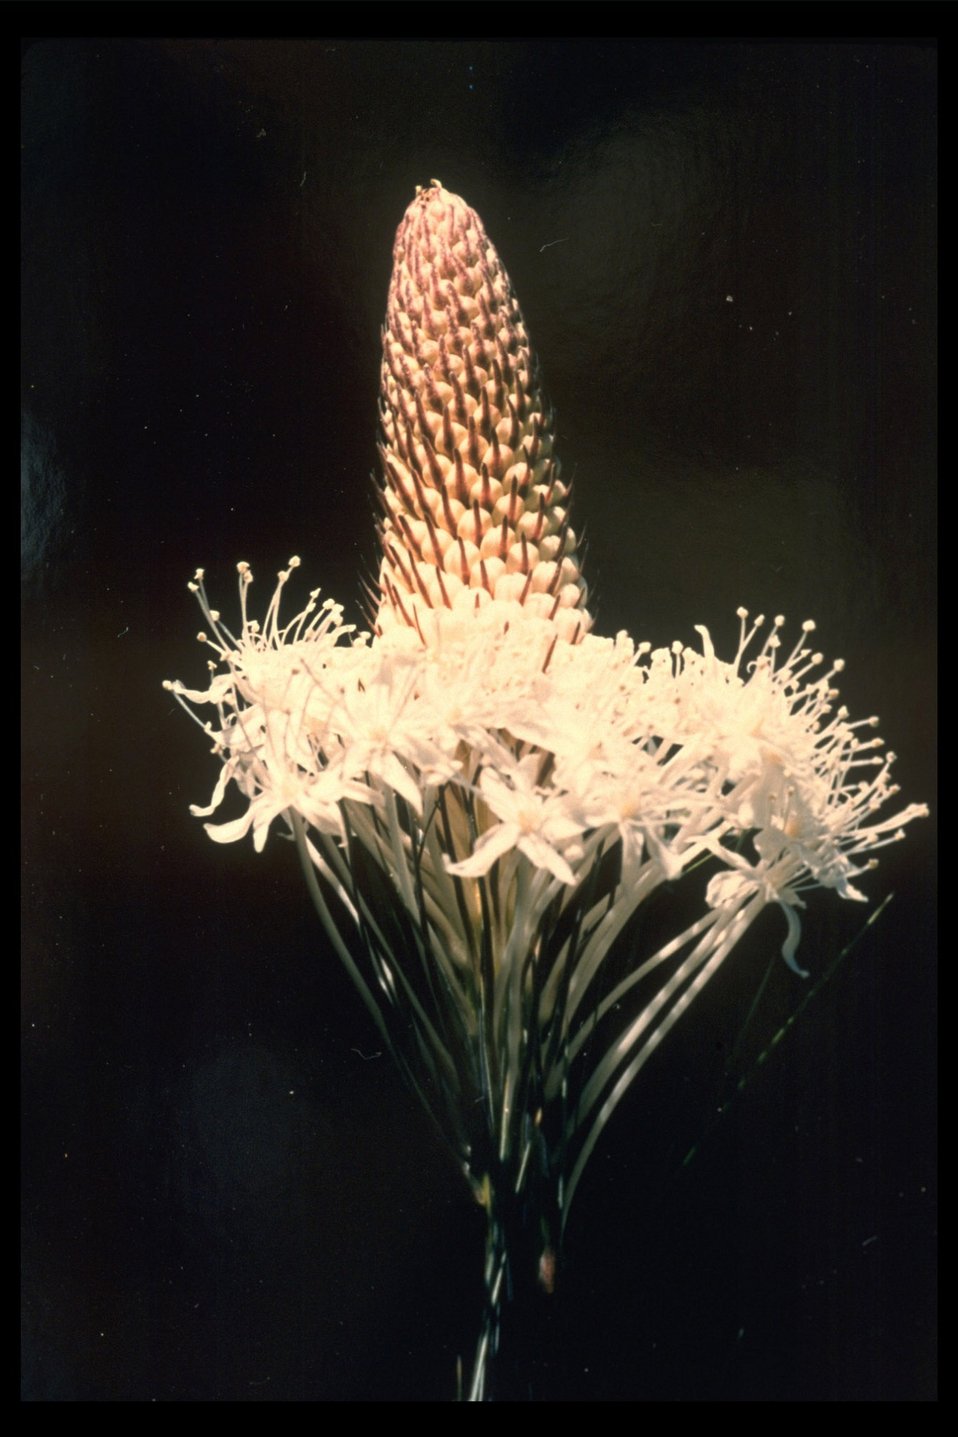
Close up of blossom on Bear Grass (Xerophyllum tenax) along Board Mountain.